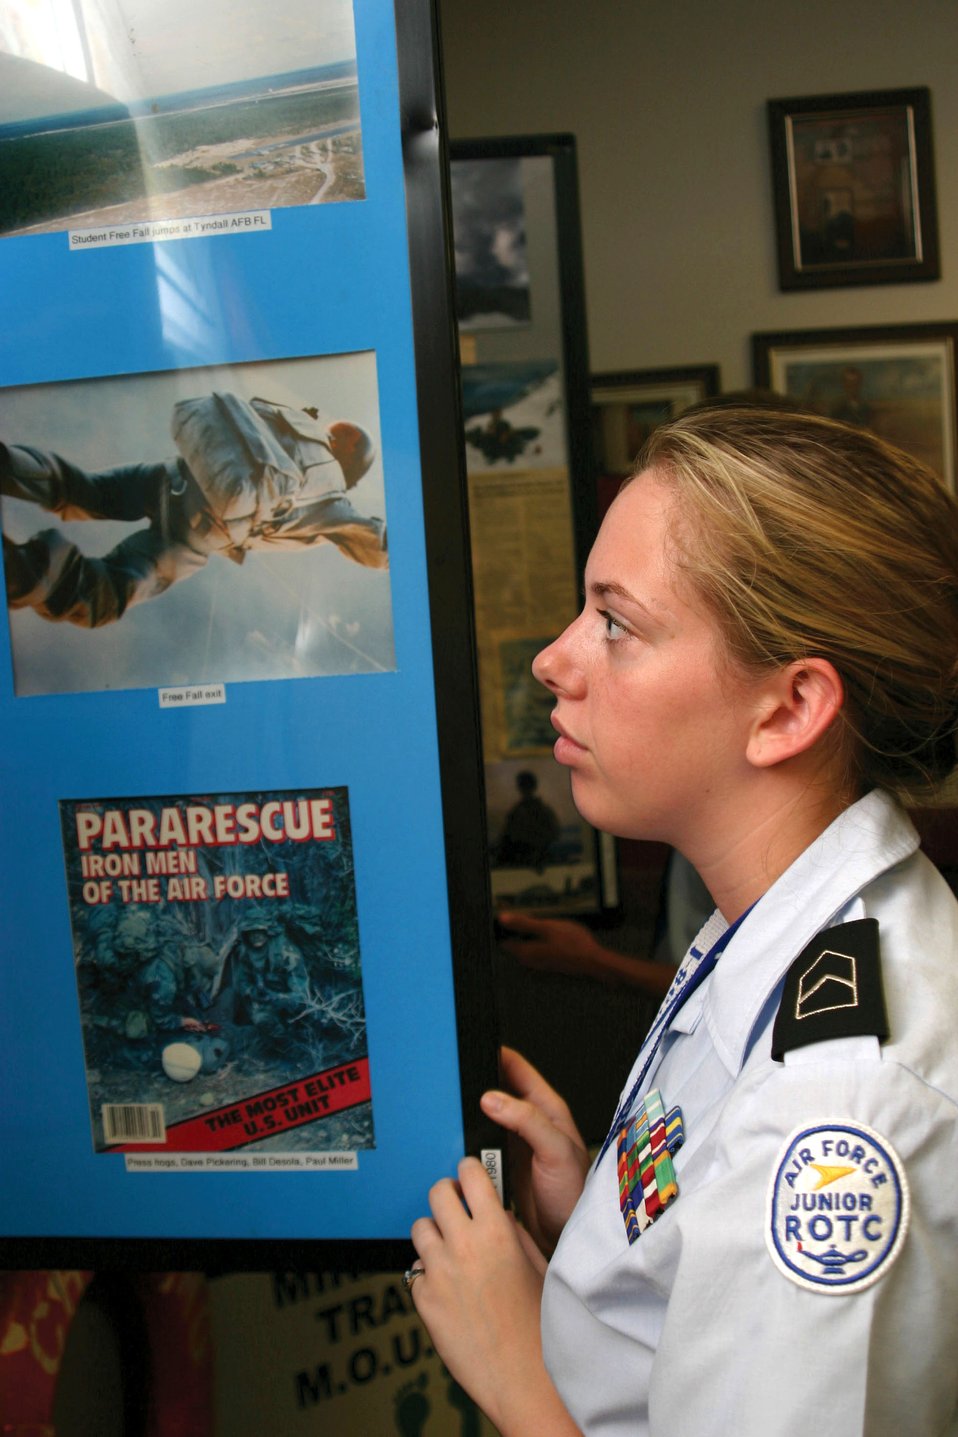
Junior ROTC cadets explore Air Force careers

Air Force Junior ROTC Cadet Stephanie Hurstell looks through an archive of articles on pararescuemen July 26 during a visit to the Pararescue and Combat Rescue Officer Training School at Kirtland Air Force Base, N.M. Cadets from Junior ROTC units worldwide visited various science and technology centers and several Air Force bases as part of the 2007 Air Force Junior ROTC Aerospace and Technology Honor Camps. Approximately 450 cadets attended one of eight camps this year in New Mexico and Oklahoma. Currently, there are more than 100,000 cadets in the Air Force Junior ROTC program worldwide.